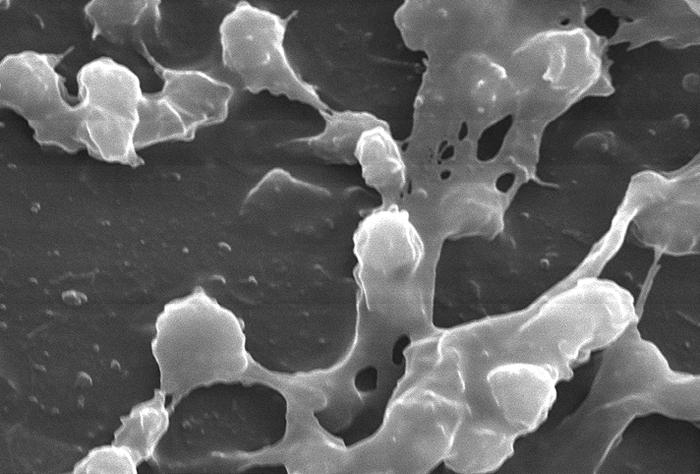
This highly magnified electron micrograph depicted numbers of Staphylococcus aureus bacteria, which were found on the luminal surface of an indwelling catheter. Of importance is the sticky-looking substance woven between the round cocci bacteria, which was composed of polysaccharides, and is known as 'biofilm'. This biofilm has been found to protect the bacteria that secrete the substance from attacks by antimicrobial agents such as antibiotics; Magnified 2363x.S. aureus, often referred to simply as "staph," are bacteria commonly carried on the skin, or in the nose of healthy people. Approximately 25% to 30% of the population is colonized, i.e., when bacteria are present, but not causing an infection, in the nose with staph bacteria.